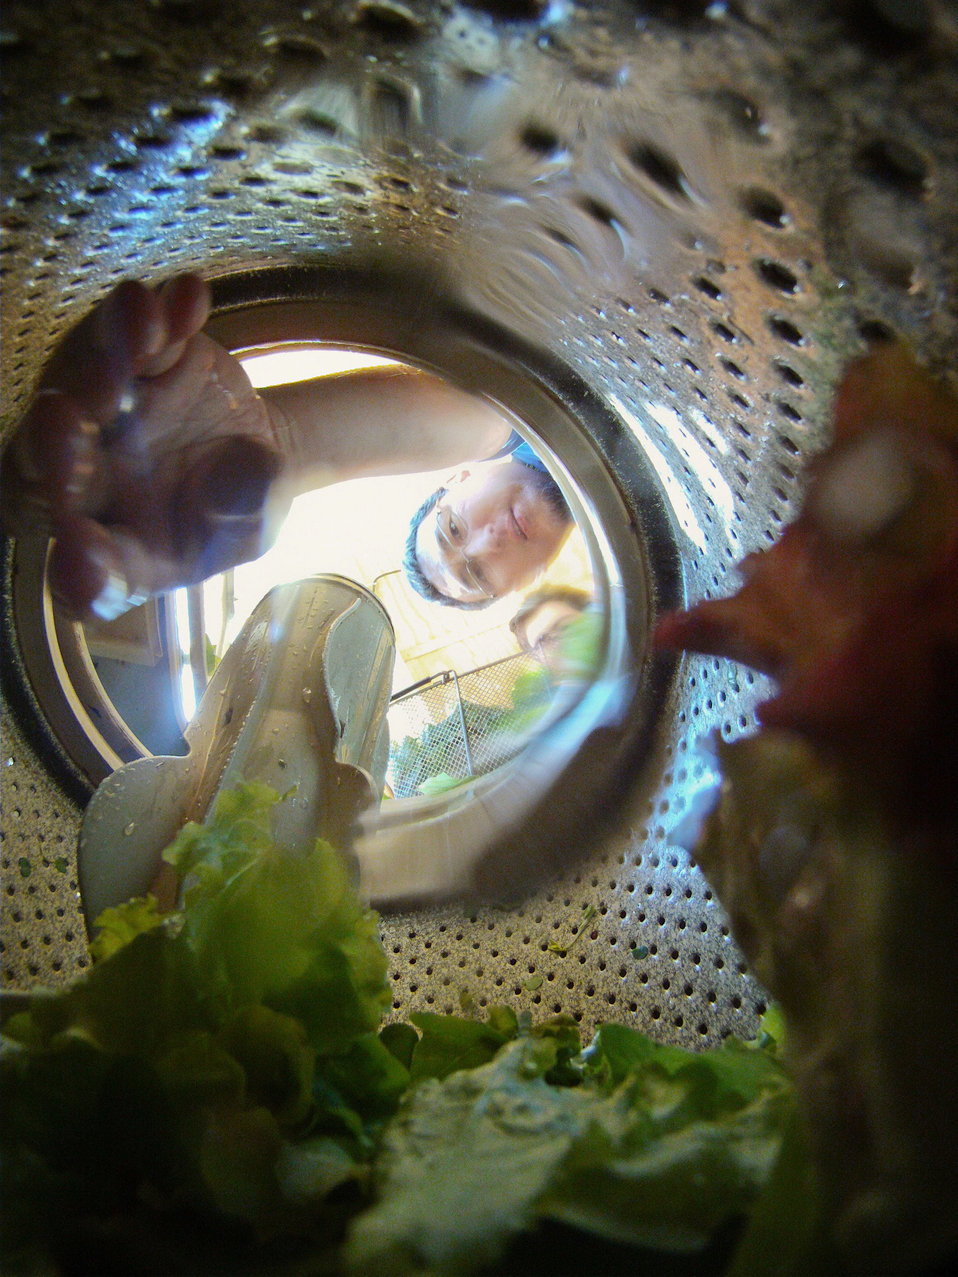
U.S. Department of Agriculture photographer Lance Cheung retrieves his waterproof camera after used to get still and video images of the leaves pouring into a washing machine to dry in a spin cycle at Manakintowne Specialty Growers, a 21-acre farm in Powhatan County, Virginia, on Friday, May 6, 2011. The farm where Jo Pendergraph, her family and team raise specialty produce for chefs and markets of Richmond, Charlottesville and Williamsburg, VA area. This includes the online food hub of Lulus Local Food served by the Fall Line Farms cooperative. This is one of the farms that chefs get those seemingly unique greens such as French Sorrel, Pea Shoots, Frisee, Tat soi, Mizuna, Pink/green radish shoots, Sunflower shoots, Baby red mustard, Tuscan Kale, Beet greens. All harvested by hand and scissors. As well as micro greens such as Pak choi, Tat soi, Mizuna, Purple kohlrabi, Shungiku (edible chrysanthemum), Ruby chard, Purple/Daikon/Triton radish, Red amaranth and Bull's Blood Beet. Edible flowers such as African Blue Basil, Nasturtiums, Johnny Jump Ups, and Chive blossoms Dianthus (pinks) are grown here. The seasonal choices are listed by suppliers and ordered by members on Lulus Local Food website, the food is distributed to pick-up points in the Richmond, VA area. They also offer a wide variety of household food staples and specialty fruits, vegetables, meats, soaps, eggs, cheeses, flowers, honey, pastas, sauces, syrups, baked goods, mushrooms, flour and grains from and for the Richmond. VA area.